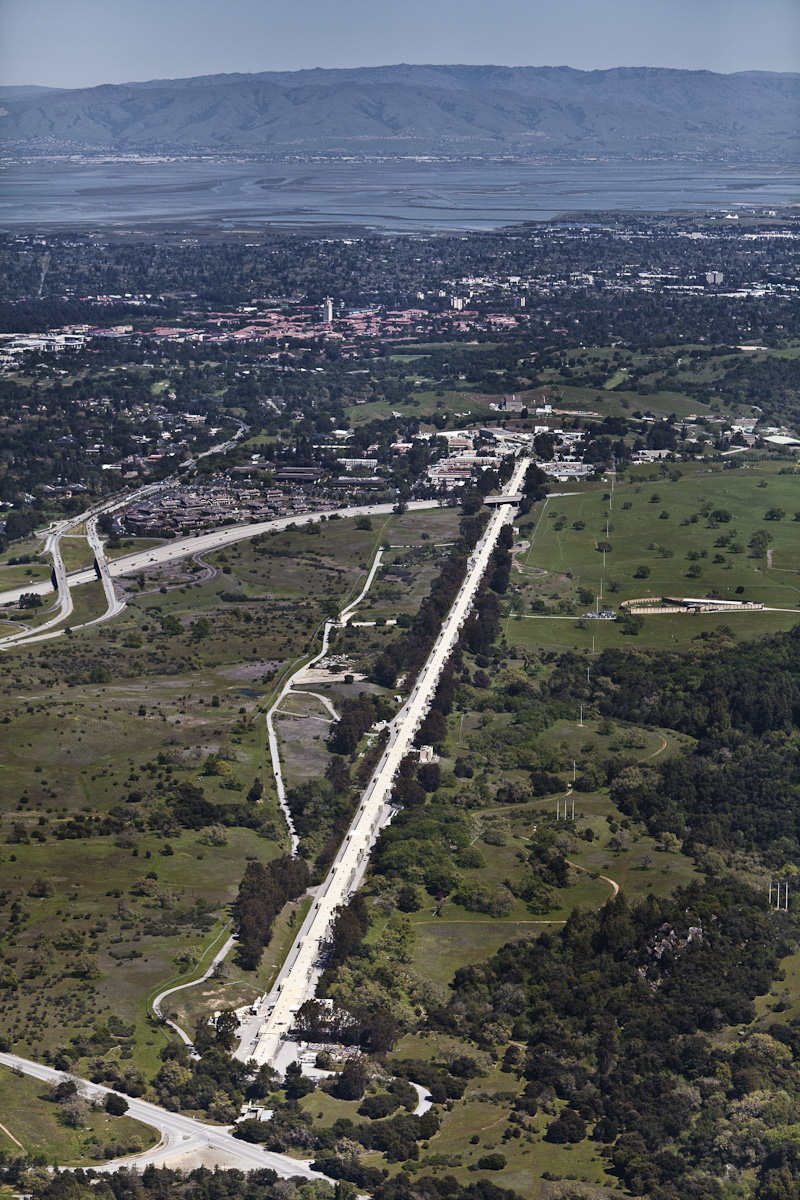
SLAC National Accelerator Laboratory in Menlo Park, Calif.

An aerial view shows the SLAC National Accelerator Laboratory in Menlo Park, Calif.